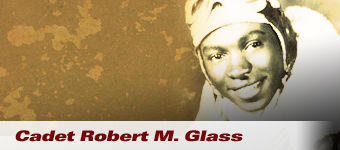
Cadet Robert M. Glass

Robert M. Glass, Tuskegee Airman